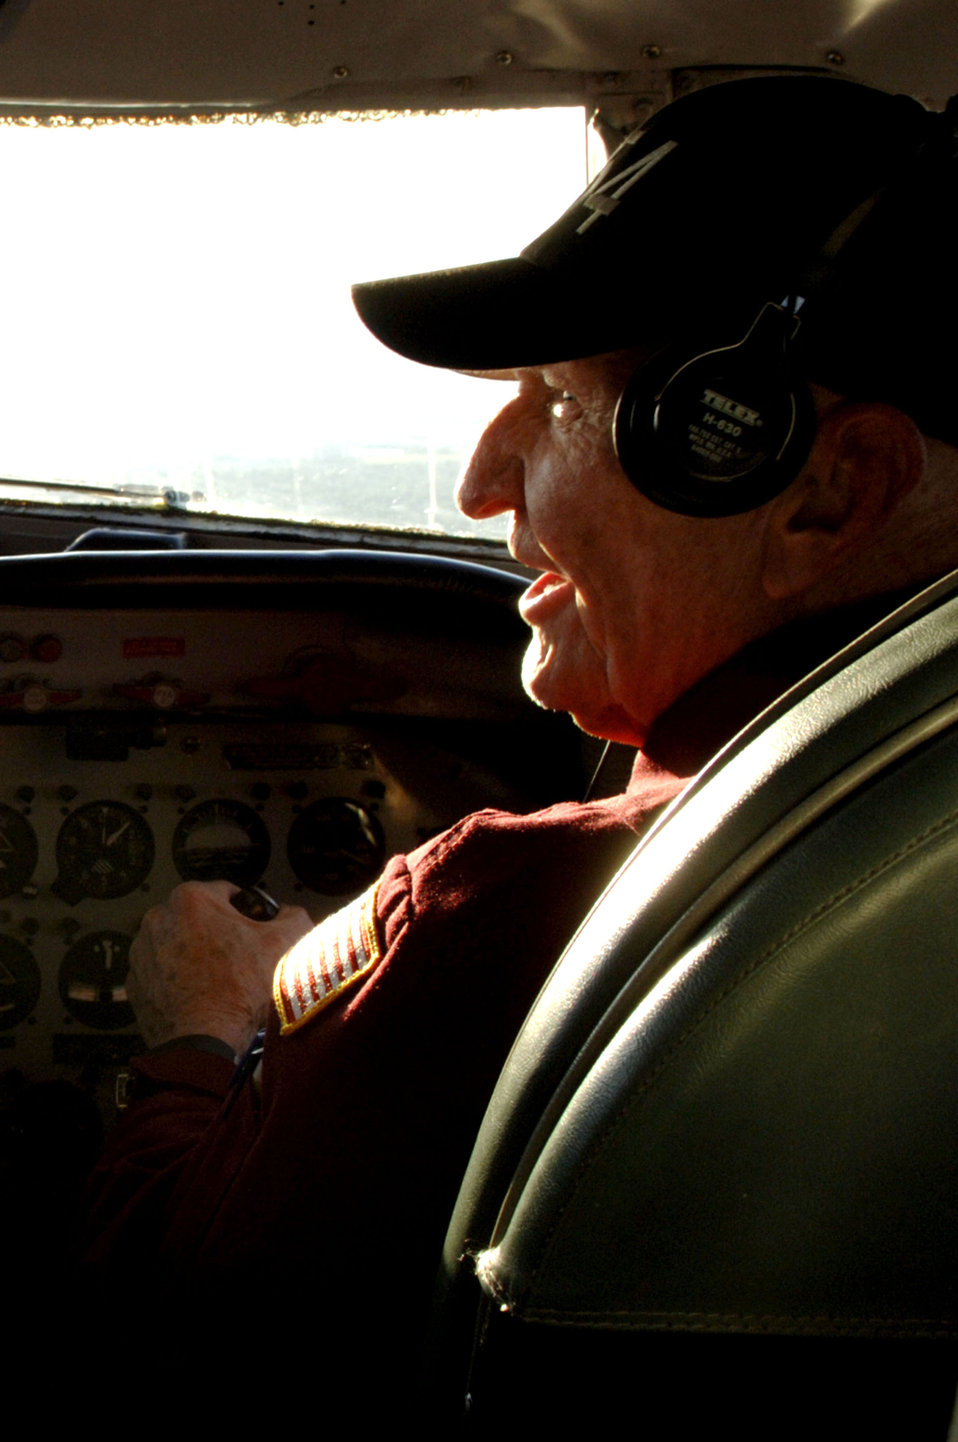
Phoenix Rally celebrates 60th Anniversary of Berlin Airlift

Retired Col. Gail Halvorsen pilots the C-54 Skymaster